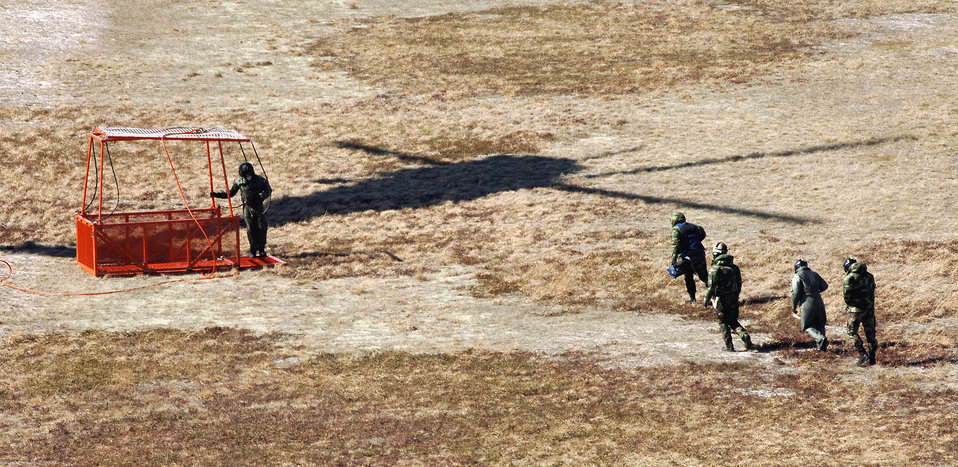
Heli-Basket undergoes testing

Volunteers from the 106th Rescue Wing at Francis S. Gabreski Field, N.Y., move to board a rescue basket during certification testing at Westhampton Beach, N.Y., Tuesday, Feb. 28, 2006. Wing volunteers helped test the basket so it can be certified for use in rescuing people. It was the first time humans were used in the testing.